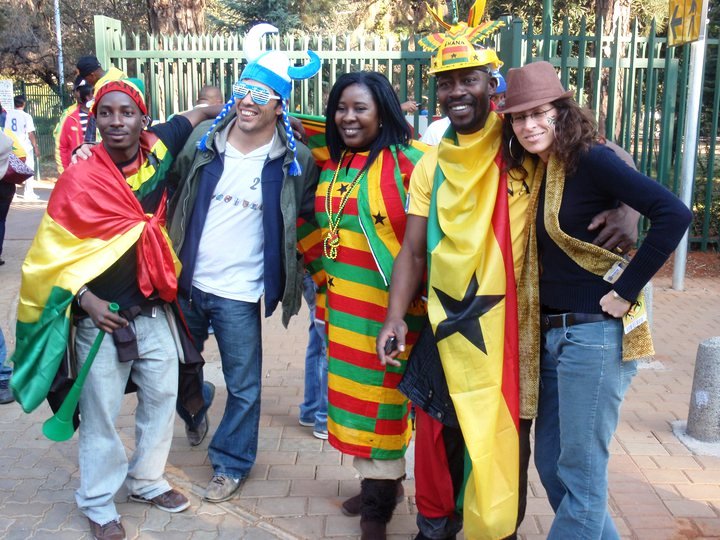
Press Attache Hudson-Dean Joins Ghanaian Fans

U.S. Embassy Pretoria Press Attache joins Ghanaian fans for a photo outside of Loftus Versfeld Stadium in Tshwane, Pretoria, South Africa, on June 13, 2010.